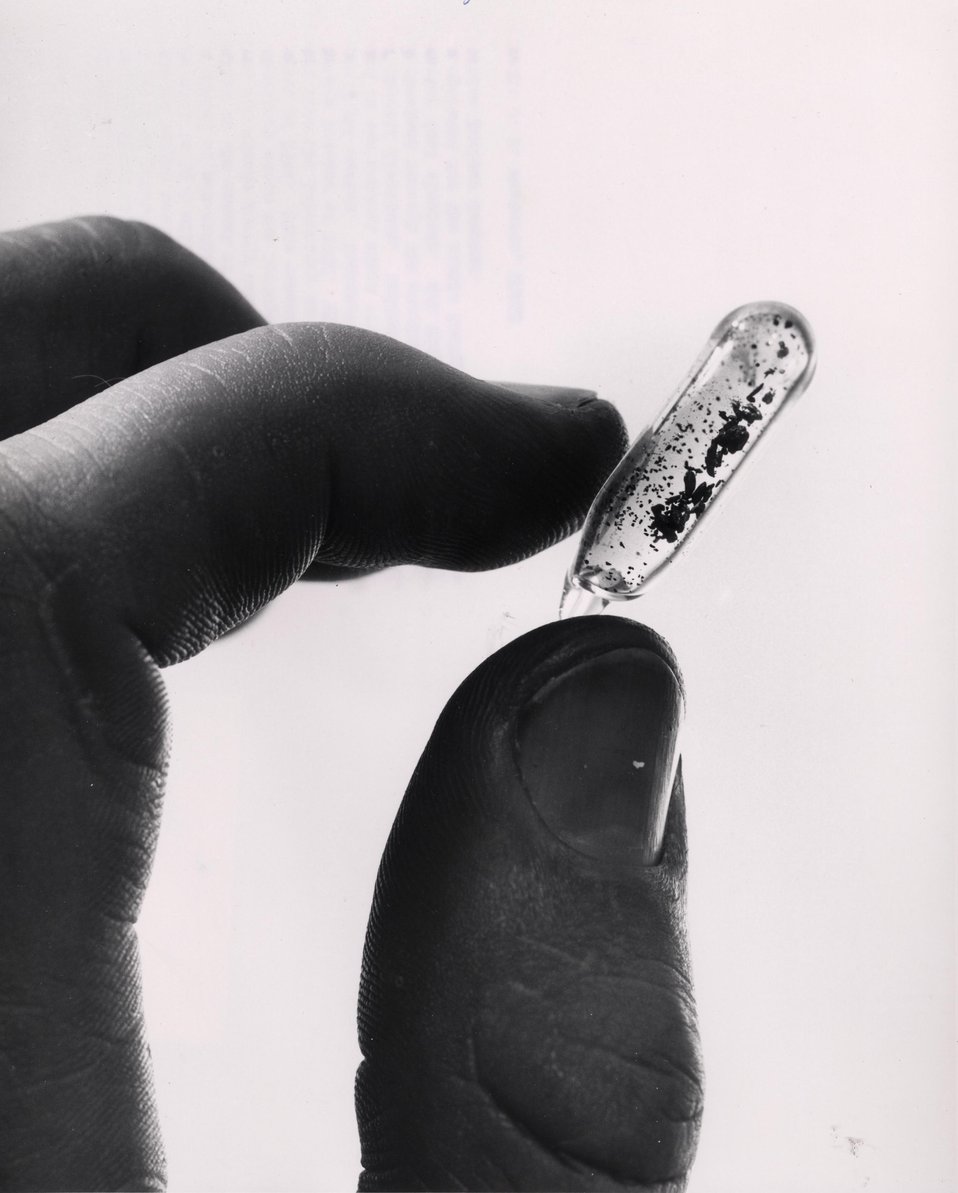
The small amount of material shown in the vial represents more than 14 years of production in the atomic energy field related to the betterment of mankind. Circa 1961.